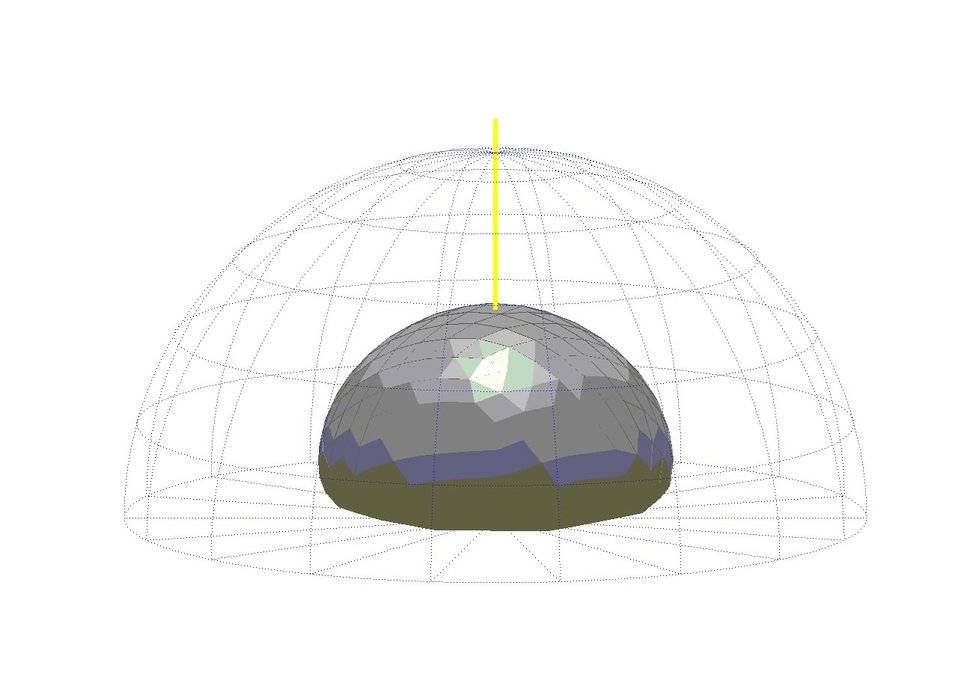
Goniospectrometer

The NIST goniospectrometer measures the intensity of light reflected from the surface of a sample at 332 points. A plot of these measurements results in a different shape depending on whether the illumination comes from above or at a 60-degree angle.